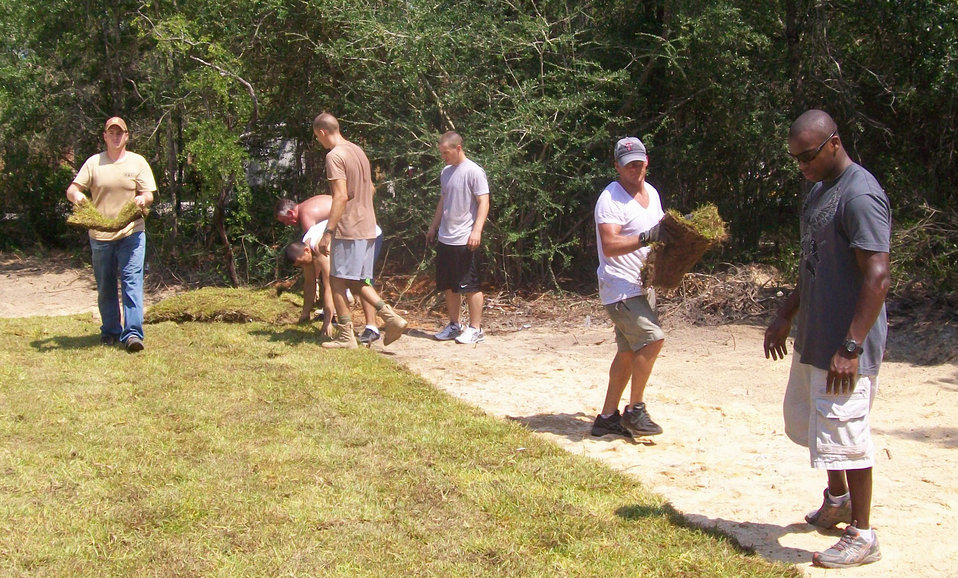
TACP park

Hurlburt Field Tactical Air Control Party Airmen laid down sod Sept. 4., 2010 in support of the new park being built for the Air Force Enlisted Village in Shalimar, Fla.